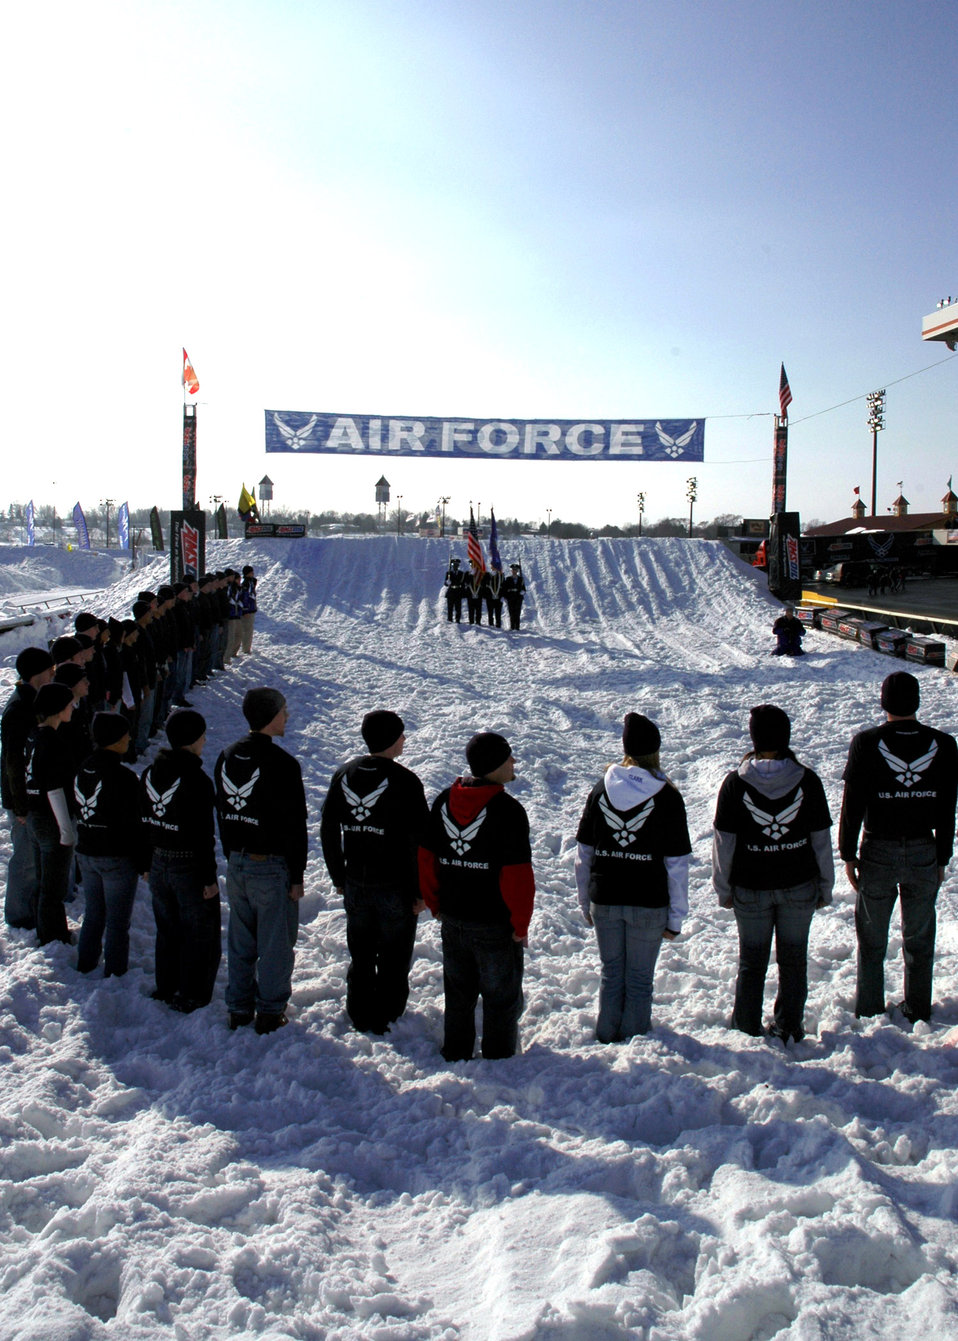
New Airmen

Thirty-four Air Force Delayed Enlistment Program members watch as the Air Force Honor Guard posts the colors at a SnoCross event in Shakopee, Minn., Jan. 12. During a break in the action later, the 34 young men and women took the oath of enlistment in front of a crowd of more than 25,000 spectators.